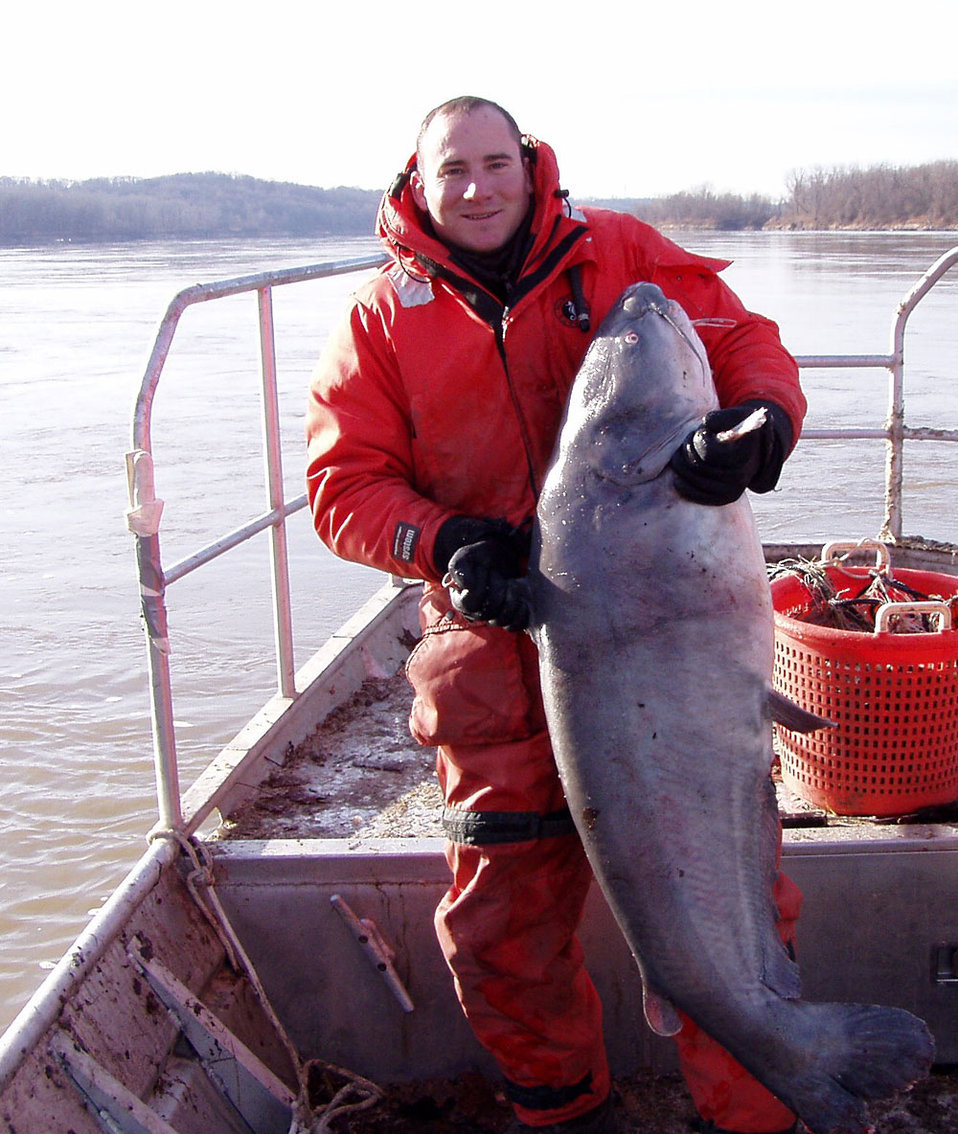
Wyatt Doyle, the Assistant Project Leader at the Columbia, Missouri, Fish and Wildlife Conservation Office, served in the U.S. Army's 82nd Airborne 1990-1993.